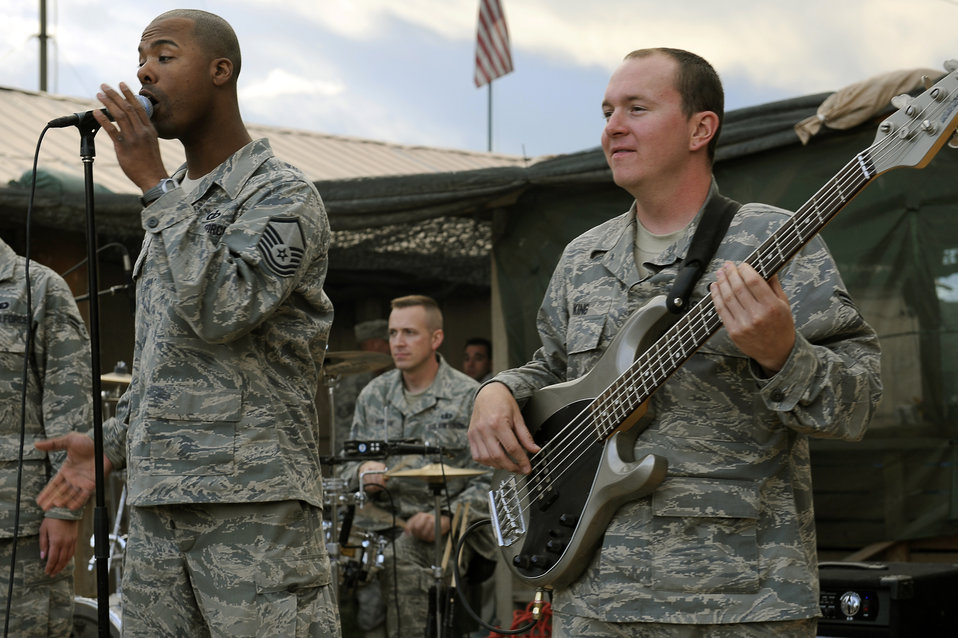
Band rocks Bagram servicemembers

Members of the Air Forces Central Expeditionary Band, Reserve Generation Master Sgt. Aaron Miles, Airman 1st Class Darren King (left to right) and Tech. Sgt. David Vittetoe (back) perform April 18, 2010, at Bagram Airfield, Afghanistan.